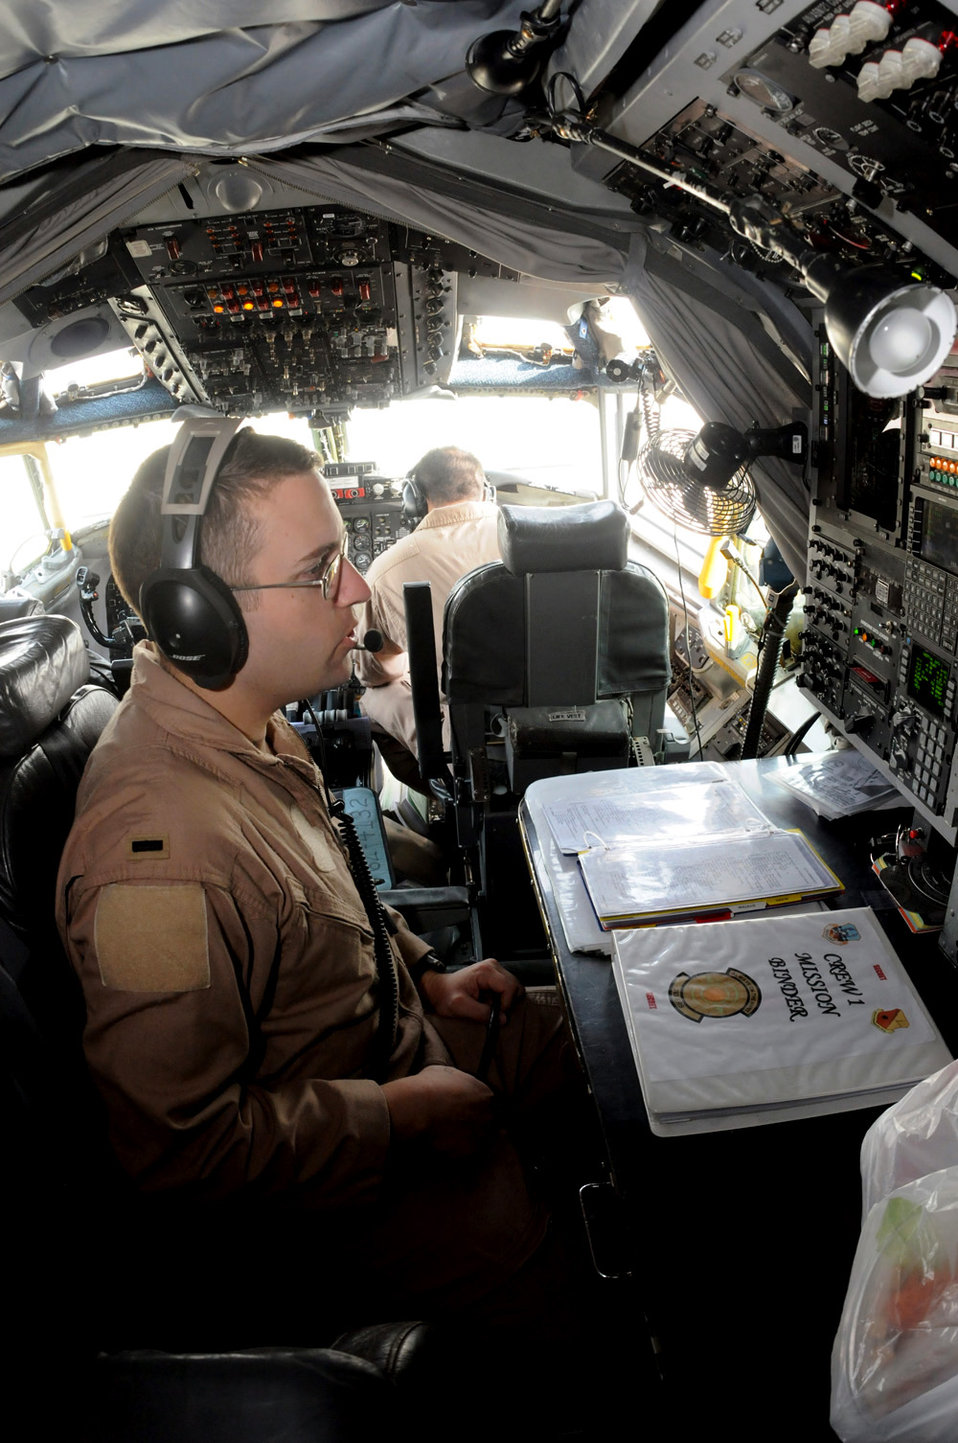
RC-135

Navigator 1st Lt. Eric Myatt performs a cross-check inside a RC-135 Rivet Joint aircraft in preparation for take off Jan. 30. Based out of Southwest Asia, the RC-135 has maintained a presence in the Central Command area of responsibility since August 1990. The lieutenant is with the 763rd Expeditionary Reconnaissance Squadron.